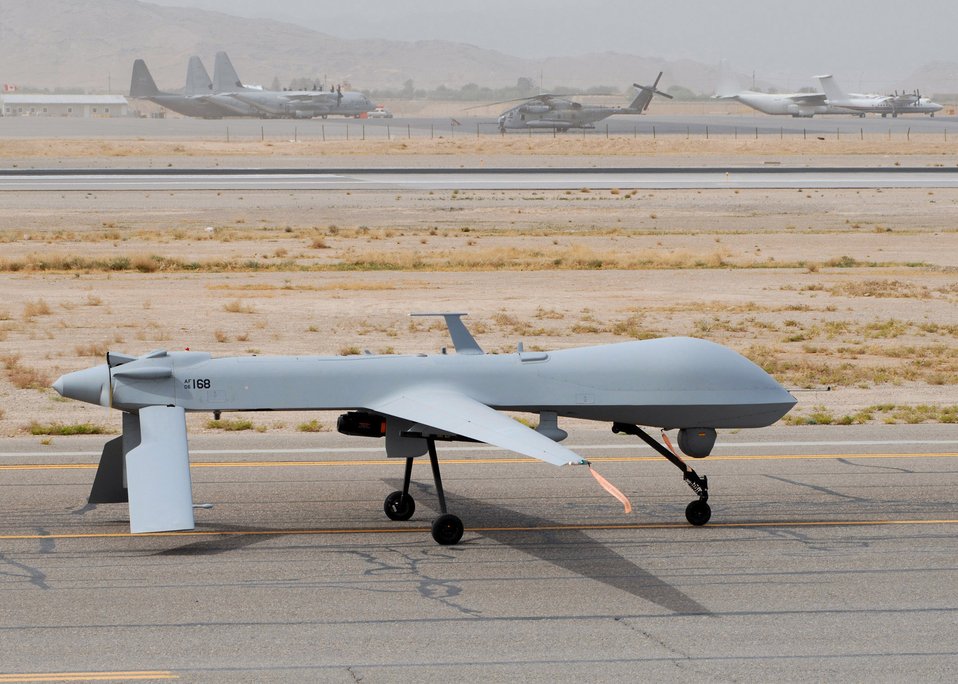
Keeping an eye out

An MQ-1 Predator returns to Bagram Air Base, Afghanistan, from an Operation Enduring Freedom mission. The unmanned aerial vehicle's primary mission is interdiction and conducting armed reconnaissance against critical, perishable targets.